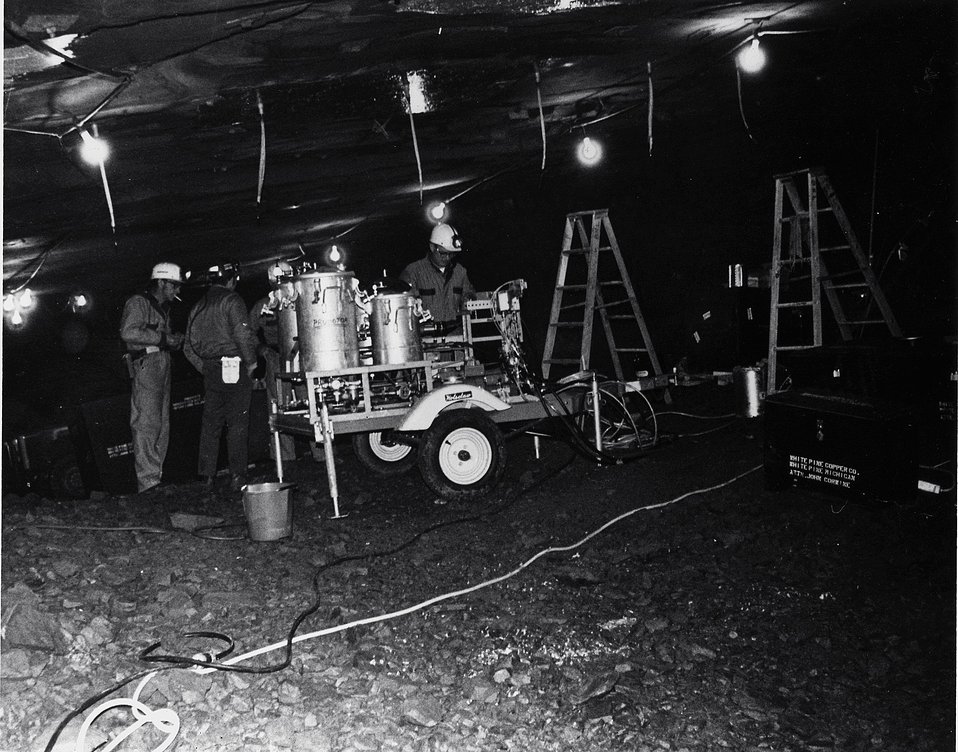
Researches are installing underground mine roof reinforcement 'bolts' developed in the radiation chemistry program at U.S. Atomic Energy Commission's Brookhaven National Laboratory.